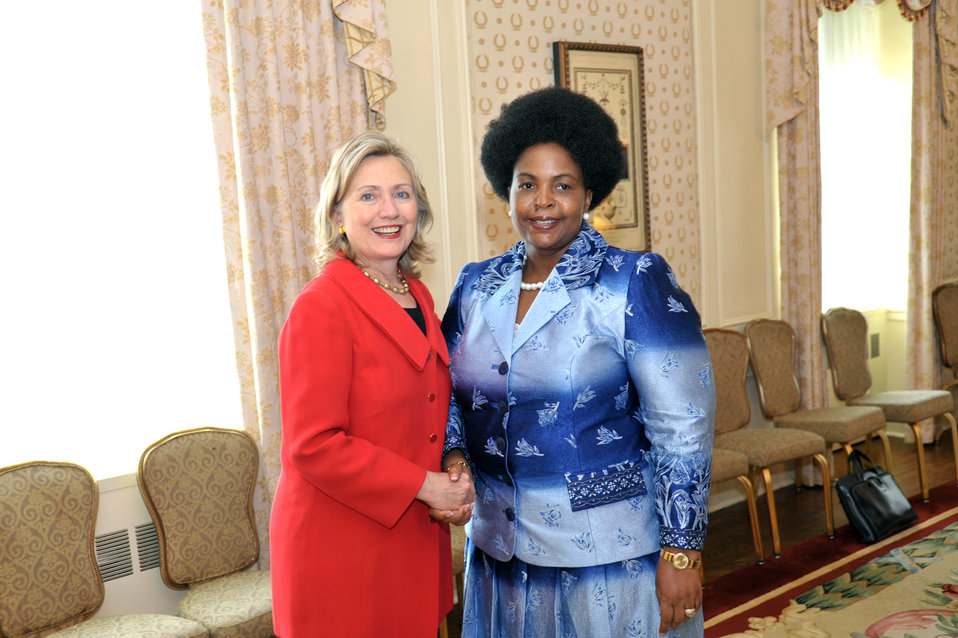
Secretary Clinton Shakes Hands With South African Foreign Minister Mashabane

U.S. Secretary of State Hillary Rodham Clinton poses for a photo with South African Foreign Minister Mashabane after their bilateral meeting at the Waldorf-Astoria in New York, New York, on September 22, 2010.